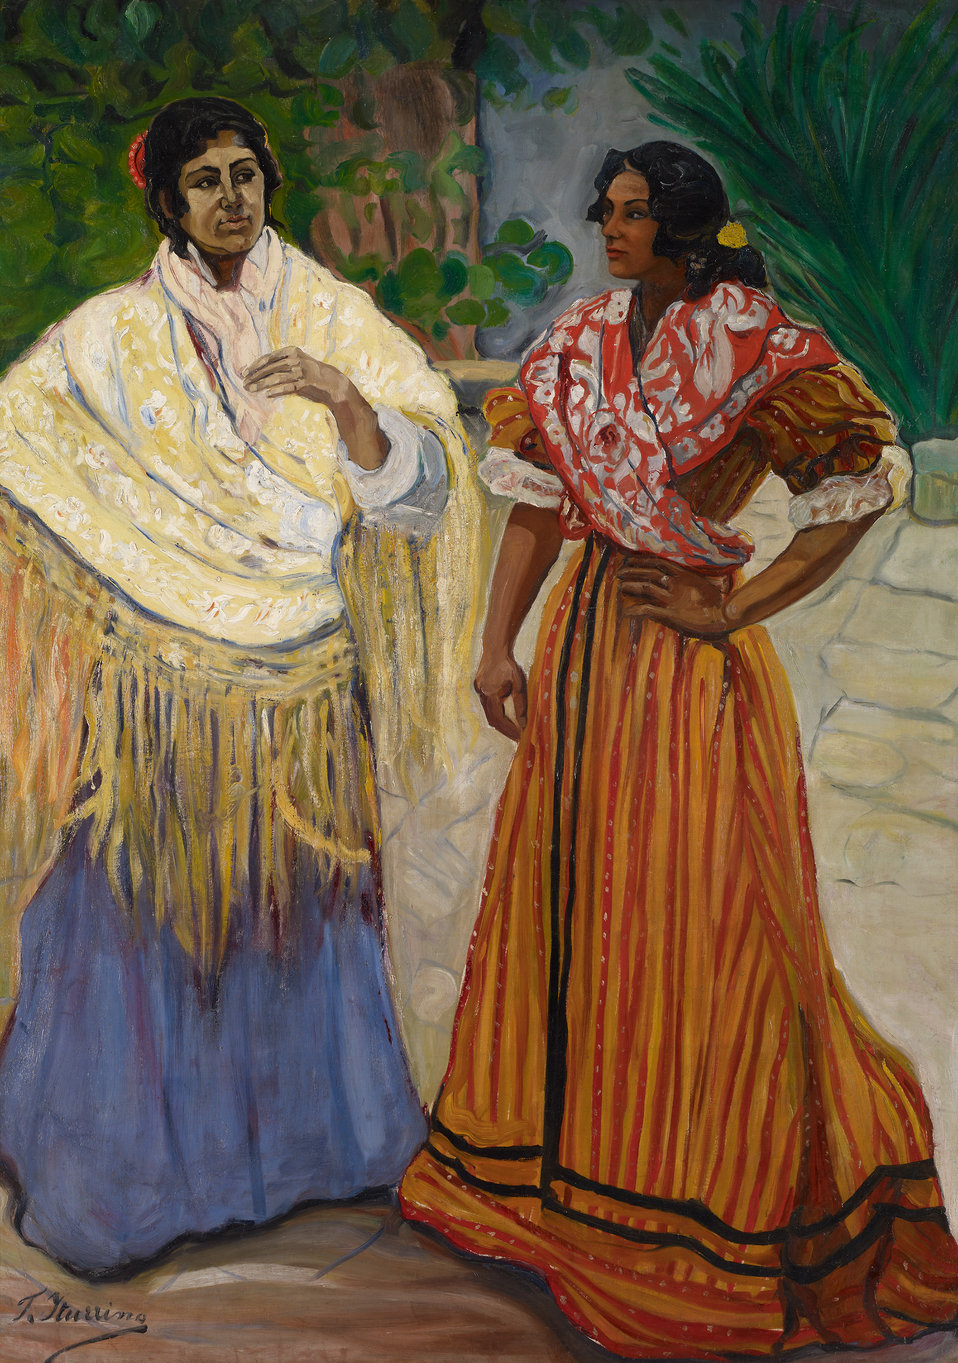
Two Gypsies. Oil on canvas, 180 x 129 cm, Inv. CTB.1996.51 Museo Carmen Thyssen Native name Museo Carmen Thyssen Location Málaga, Spain Coordinates 36° 43′ 17″ N, 4° 25′ 22″ W Established 2011 Website www.carmenthyssenmalaga.org